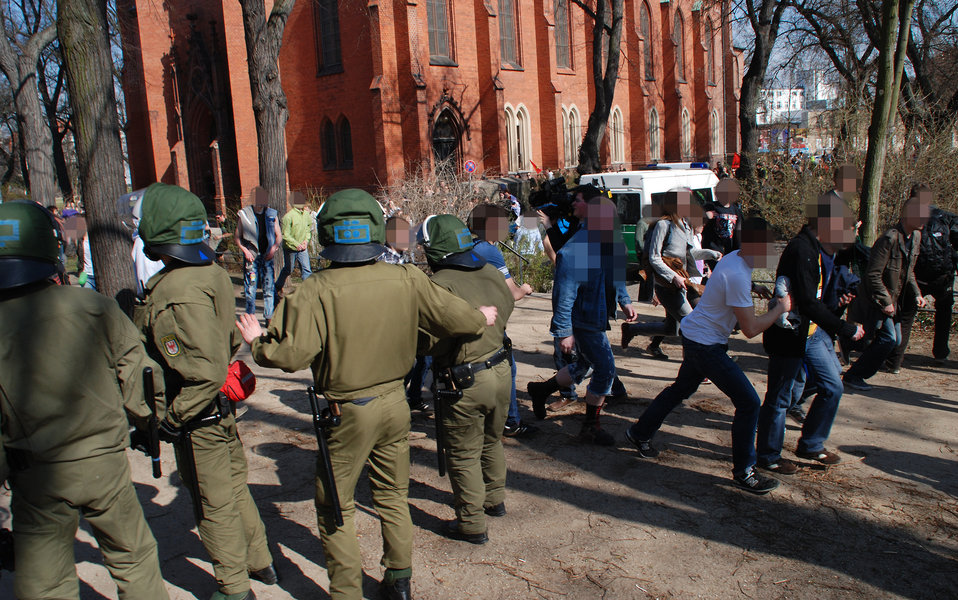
Proteste gegen den Nazi-Aufmarsch am 24.3.2012 in Frankfurt (Oder)